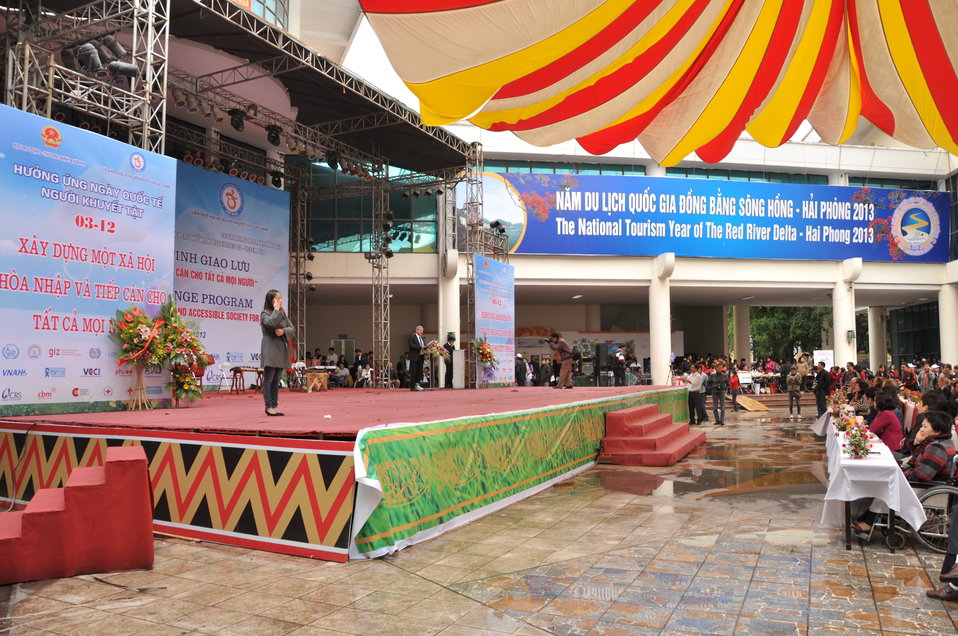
USAID joins celebration of International Day of Persons with Disabilities in Hanoi, Vietnam

December 2, 2012